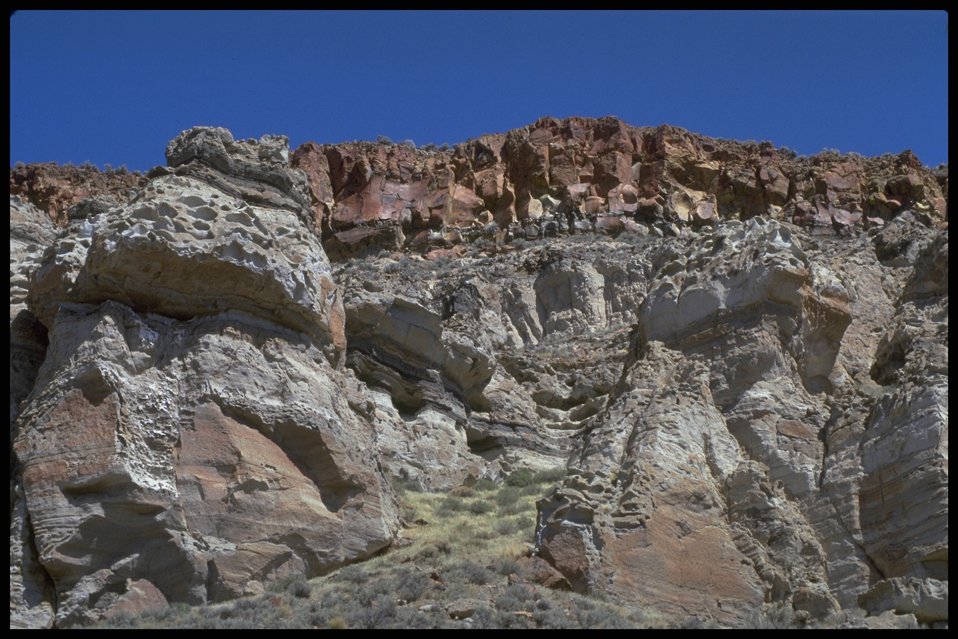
Scenic view of Greaser Canyon, Lakeview District.